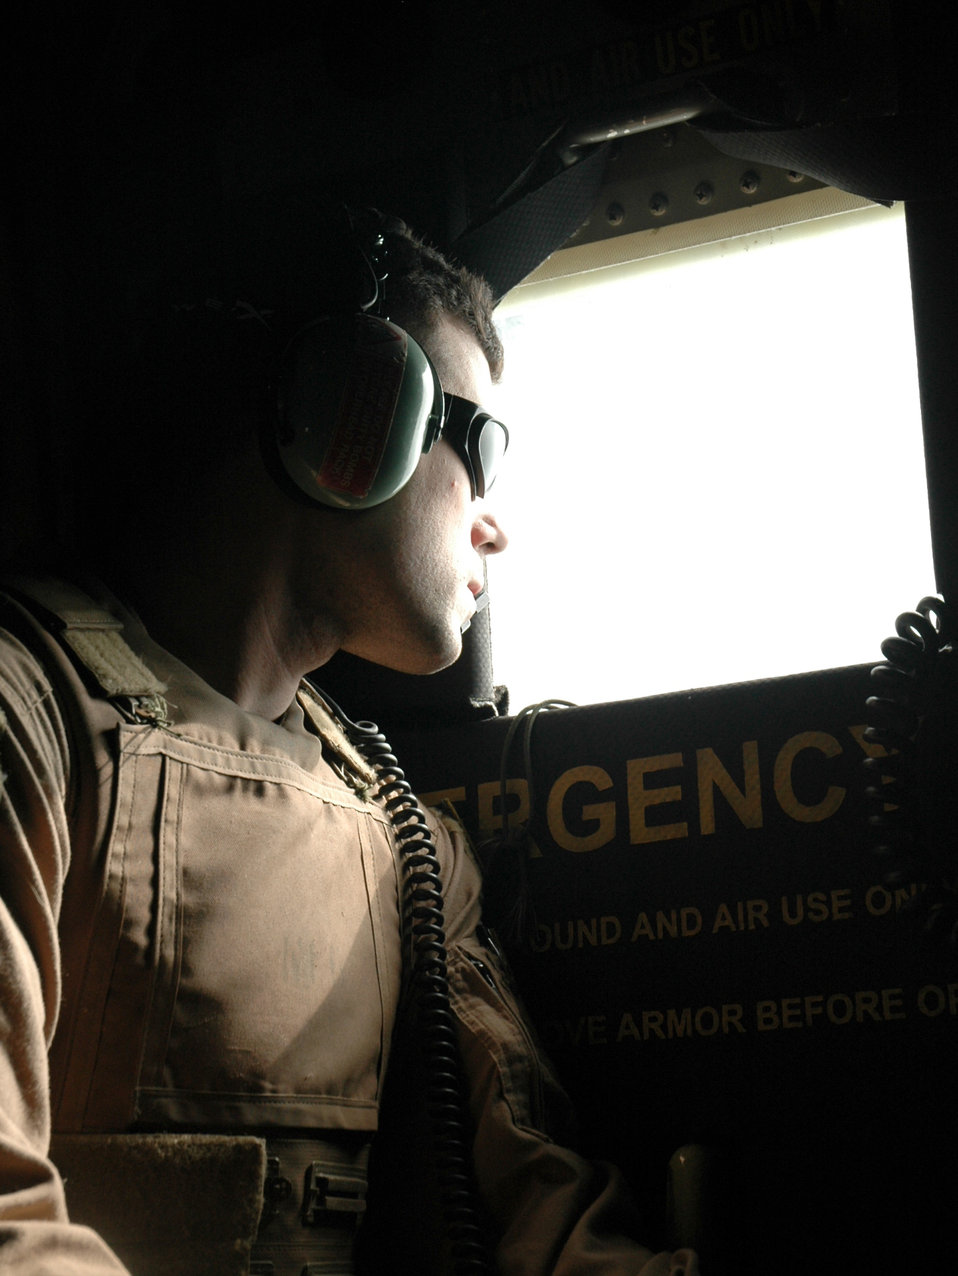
C-130 airlift reduces ground convoy operations

OVER BALAD AIR BASE, Iraq -- Senior Airman Jon Hall watches for threats out of a C-130 Hercules Jan. 26. He is a loadmaster with the 777th Airlift Expeditionary Squadron.